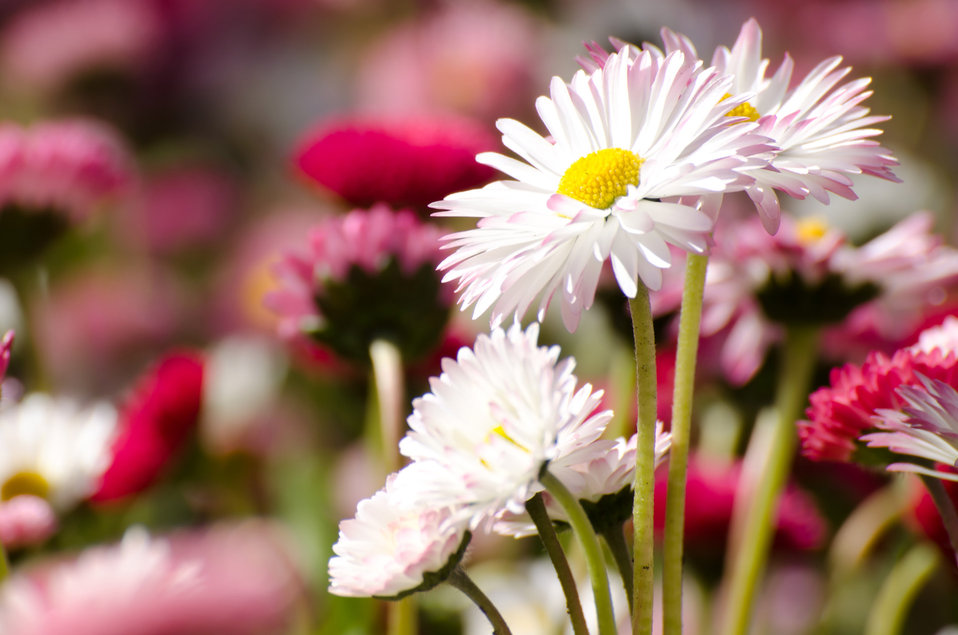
Flowers - background.